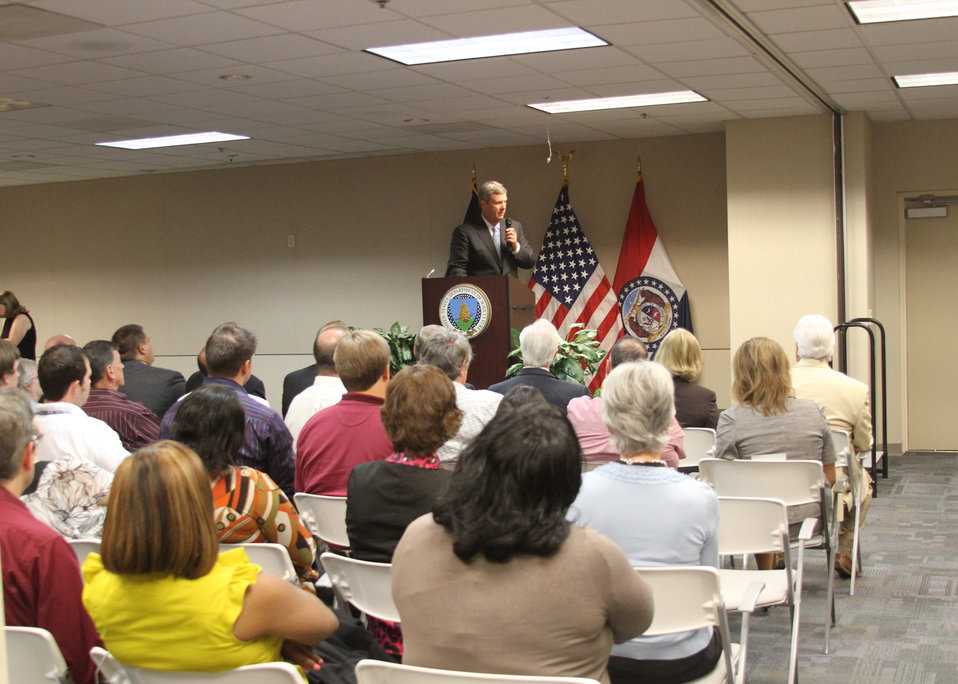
Agriculture Secretary Tom Vilsack a speaks with U.S. Department of Agriculture employees at the “Ask the Secretary” informal listening sessions as part of the Cultural Transformation initiative to transform the culture at USDA. Listening sessions are held at local field offices and provide employees an opportunity to talk directly to the secretary about issues, problems and solutions. This session was held at a USDA Service Center in Kansas City, MO, on Wednesday, July 27, 2011.